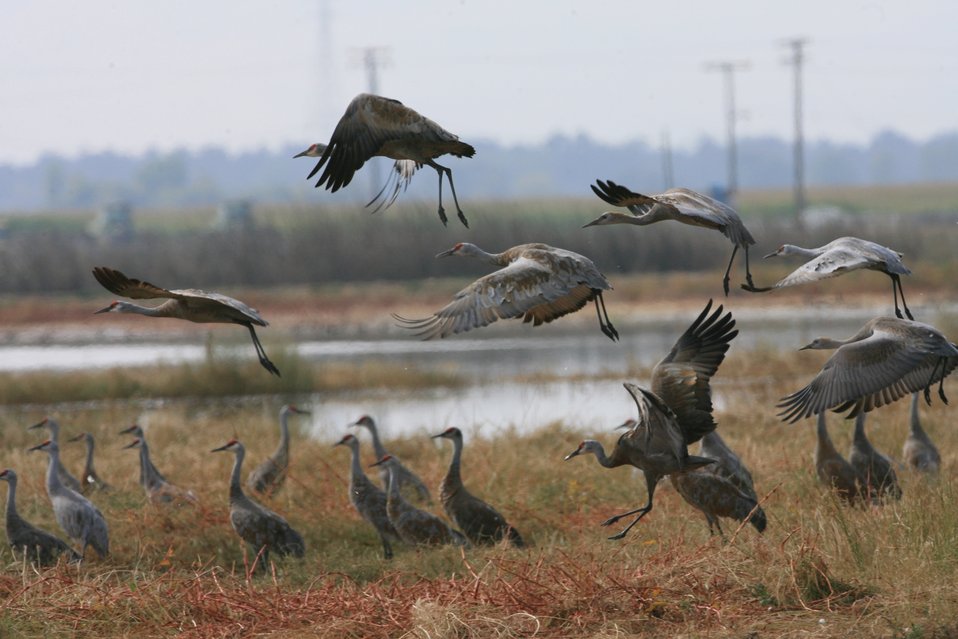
Sandhill cranes landing

Sandhill cranes at the Merced National Wildlife Refuge, CA
Lee Eastman/USFWS photo